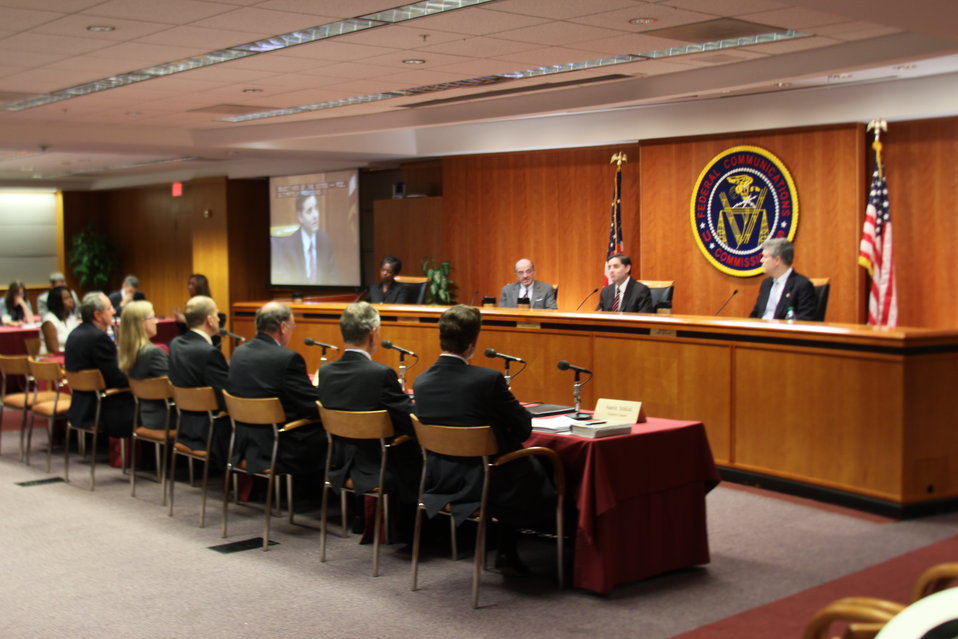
7/12/2011 Open Commission Meeting

July 2011 Open Commission Meeting on Low Power Radio Service, Cramming, and Wireless E911 Location Information